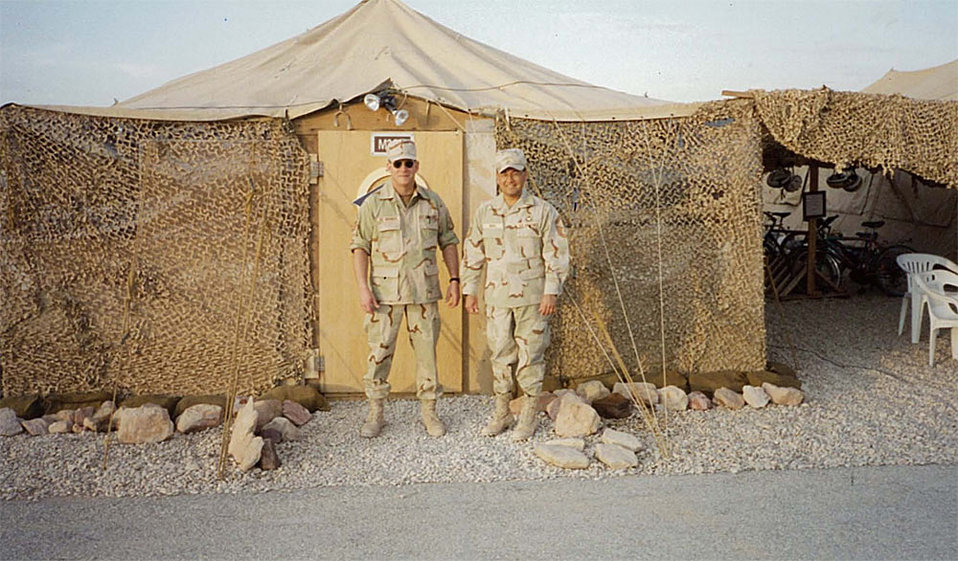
Timothy DeRohwer -- Alaska R-egion

Air Force veteran Timothy DeRohwer is a Wildlife Inspector at the North Terminal of Ted Stevens Anchorage International Airport.